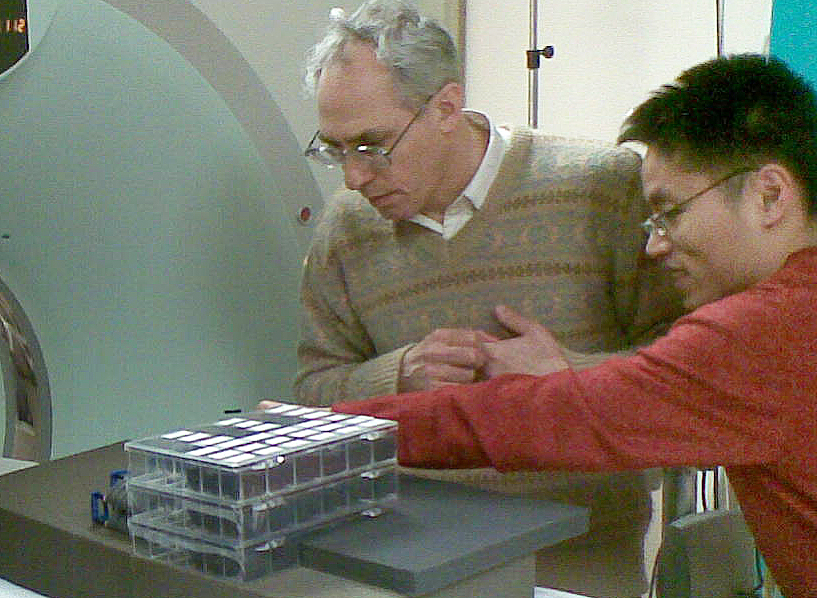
CT scans

Zachary Levine (at left) and Joe Chen prepare to load a boxful of polymer ellipsoids into a CT scanner to test its ability to measure lung tumor volumes.